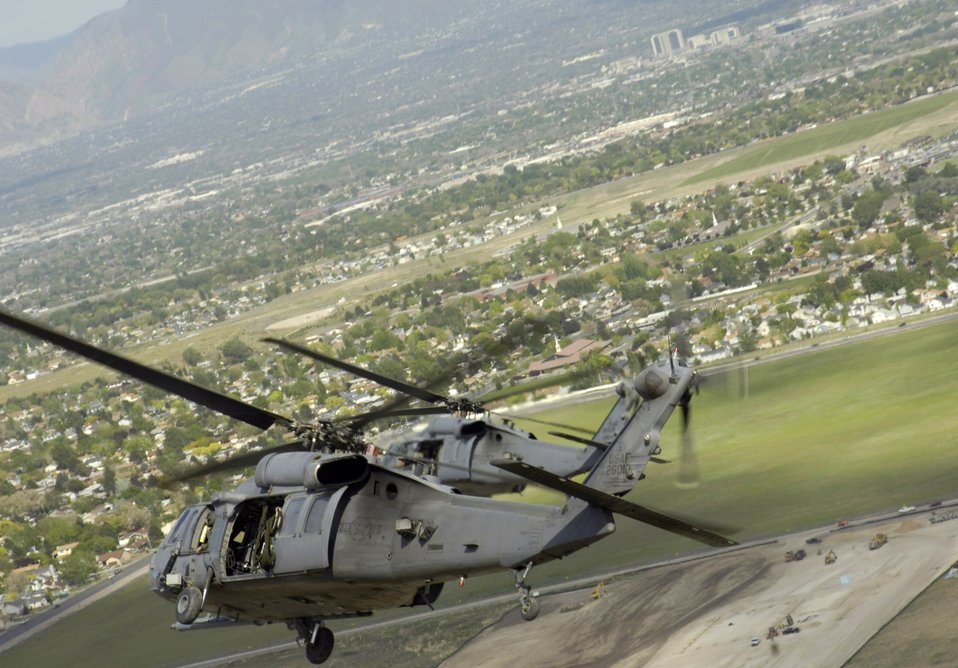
Search and rescue training

HH-60 Pave Hawks from Nellis Air Force Base, Nev., head out to the Utah Test and Training Range May 3 during a combat search and rescue integration exercise in Sandy, Utah. Members of the 34th Weapons Squadron at Nellis AFB led the search and recovery training. The objective of the exercise was to expand expertise and integration with Utah's 211th Aviation Group AH-64 Apache Joint Rotary Wing, 4th Fighter Squadron F-16 Fighting Falcon Striker assets, special operations forces and conduct extensive joint CSAR operations against surface-to air threats.